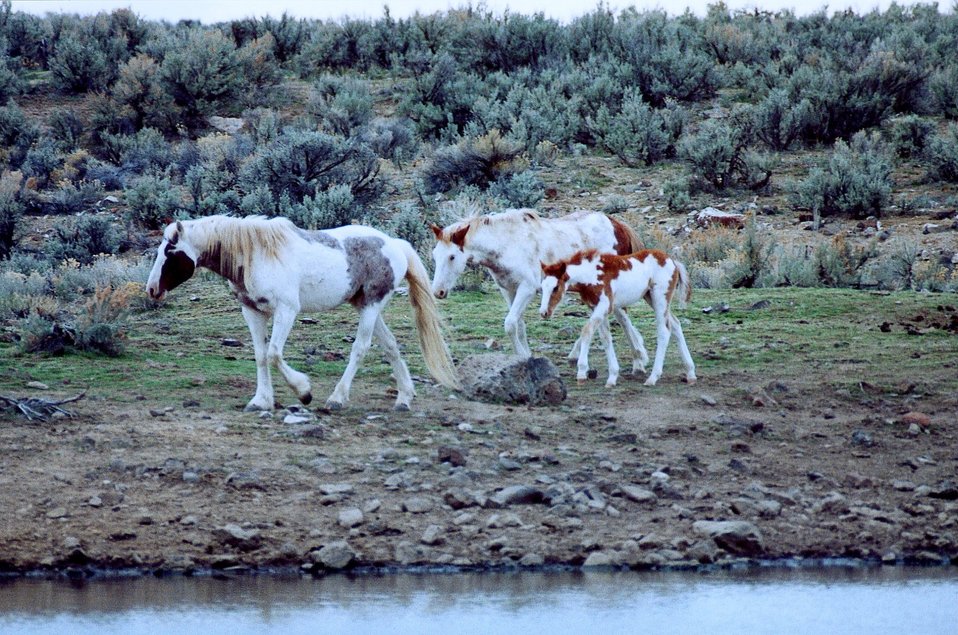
Two mares and a colt approaching South Steens Livestock Resevior.